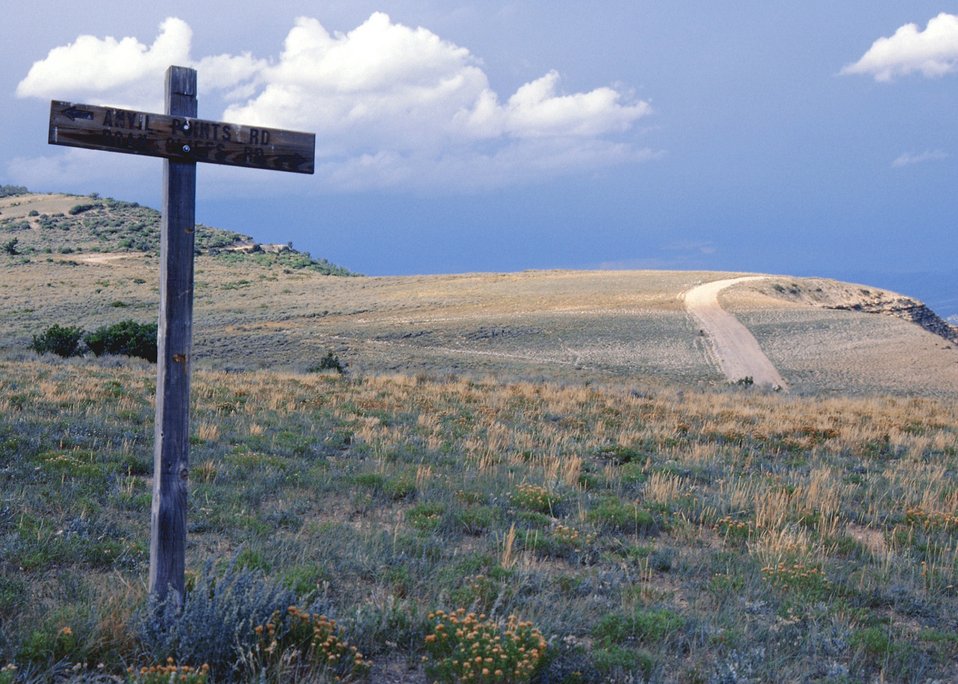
Looking north along rim road